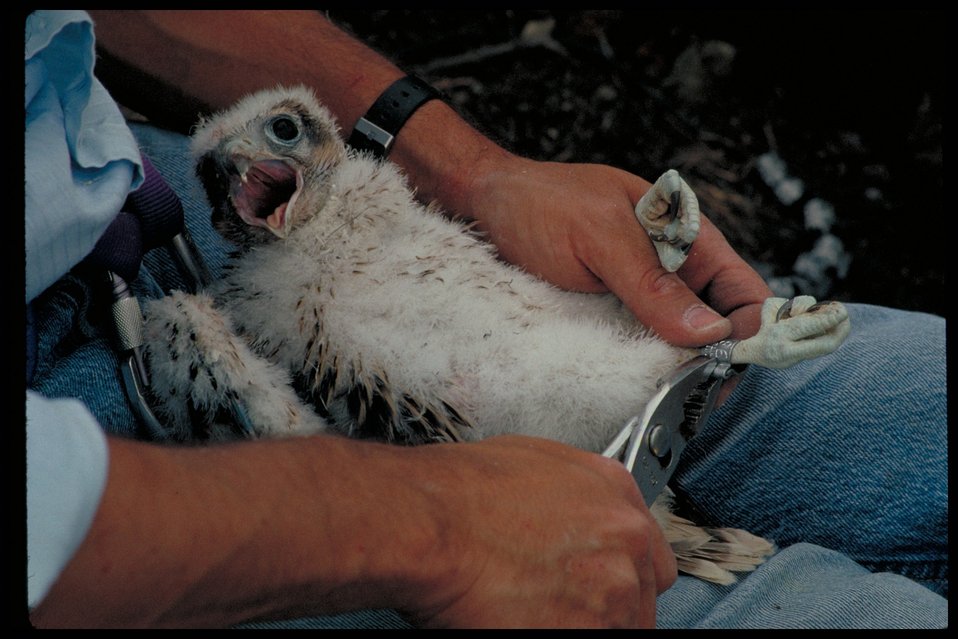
Banding chicks Research Birds of Prey National Conservation Area BOP Owyhee Field Office LSRD Lower Snake River District